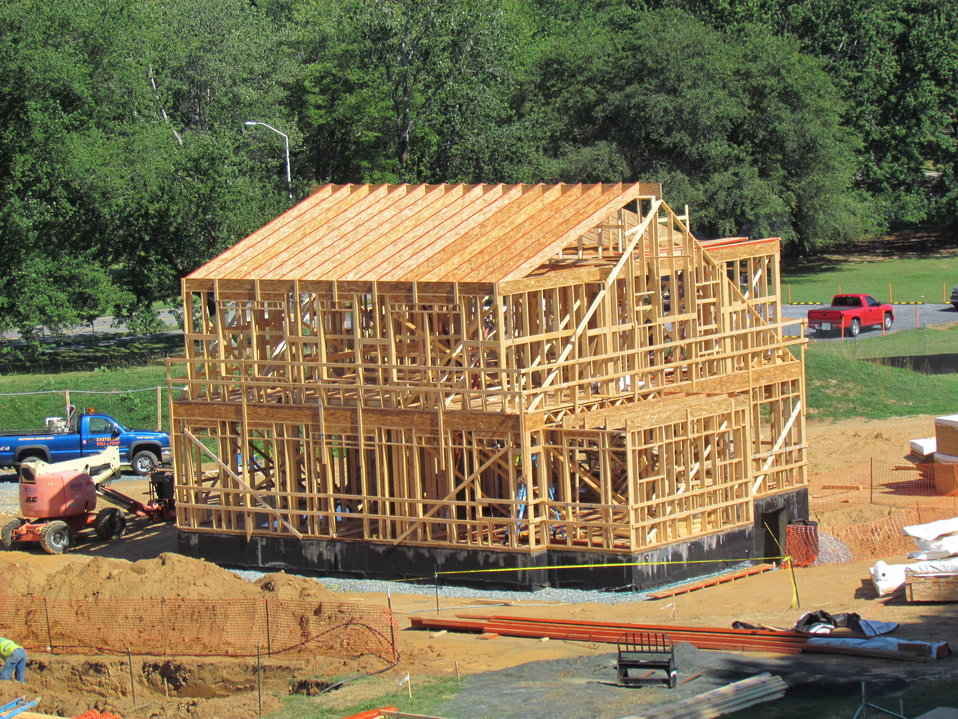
Net-Zero Energy Residential Test Facility - Photo showing framing nearing completion with roof rafters in place.